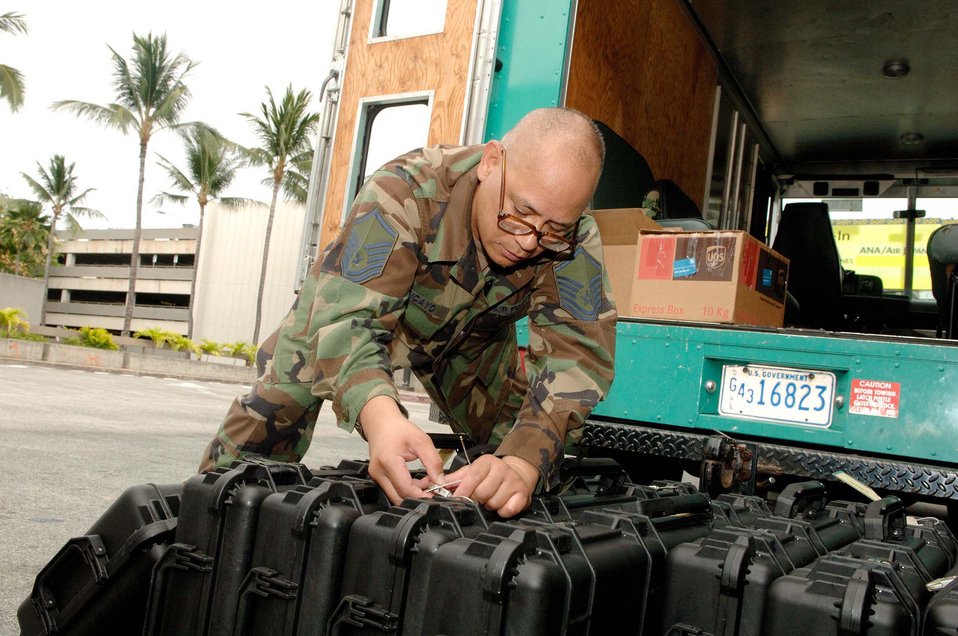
Hickam Airmen deploy to Afghanistan

Master Sgt. Robert Tancayo inspects weapon cases prior to distributing them to deploying members July 31 at Honolulu International Airport in Hawaii. Fifty-four reservists from the 624th Civil Engineer Squadron deployed to Afghanistan for Operation Enduring Freedom. Sergeant Tancayo is assigned to the 624th CES.